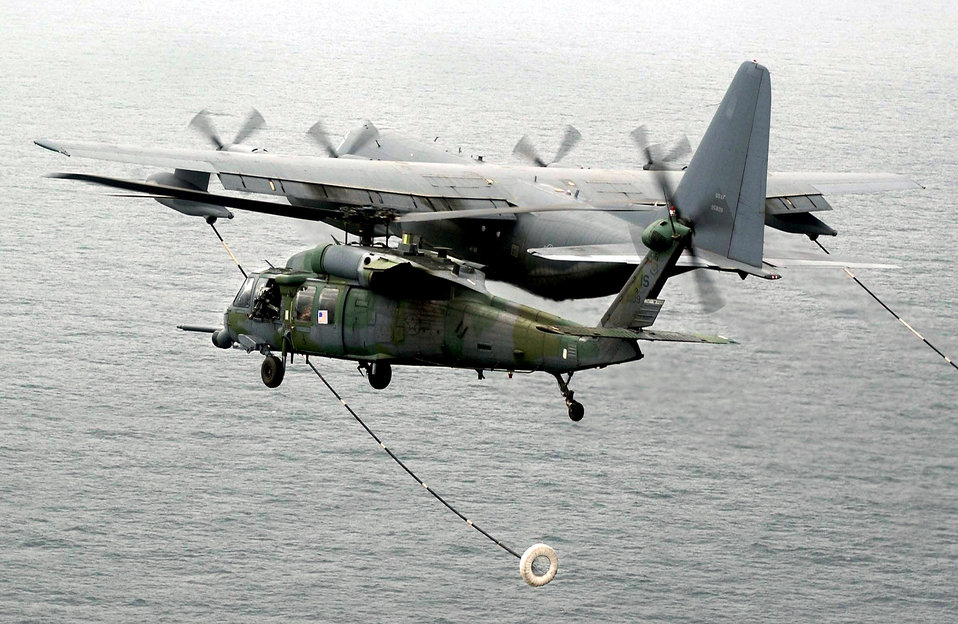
A gallon or so low

LUNGI, Sierra Leone -- An HH-60G Pave Hawk helicopter prepares for aerial refueling from an Air Force MC-130P Combat Shadow after a evacuation mission into the U.S. Embassy in Monrovia, Liberia, on July 28. The 398th Air Expeditionary Group is currently in Sierra Leone to provide personnel recovery and emergency evacuation capability for the humanitarian assistance survey team and the fleet antiterrorism security team in Liberia. The HH-60G is from the 56th Rescue Squadron at Naval Air Station Keflavik, Iceland, and the MC-130P is from the 352nd Special Operations Group at Royal Air Force Mildenhall.